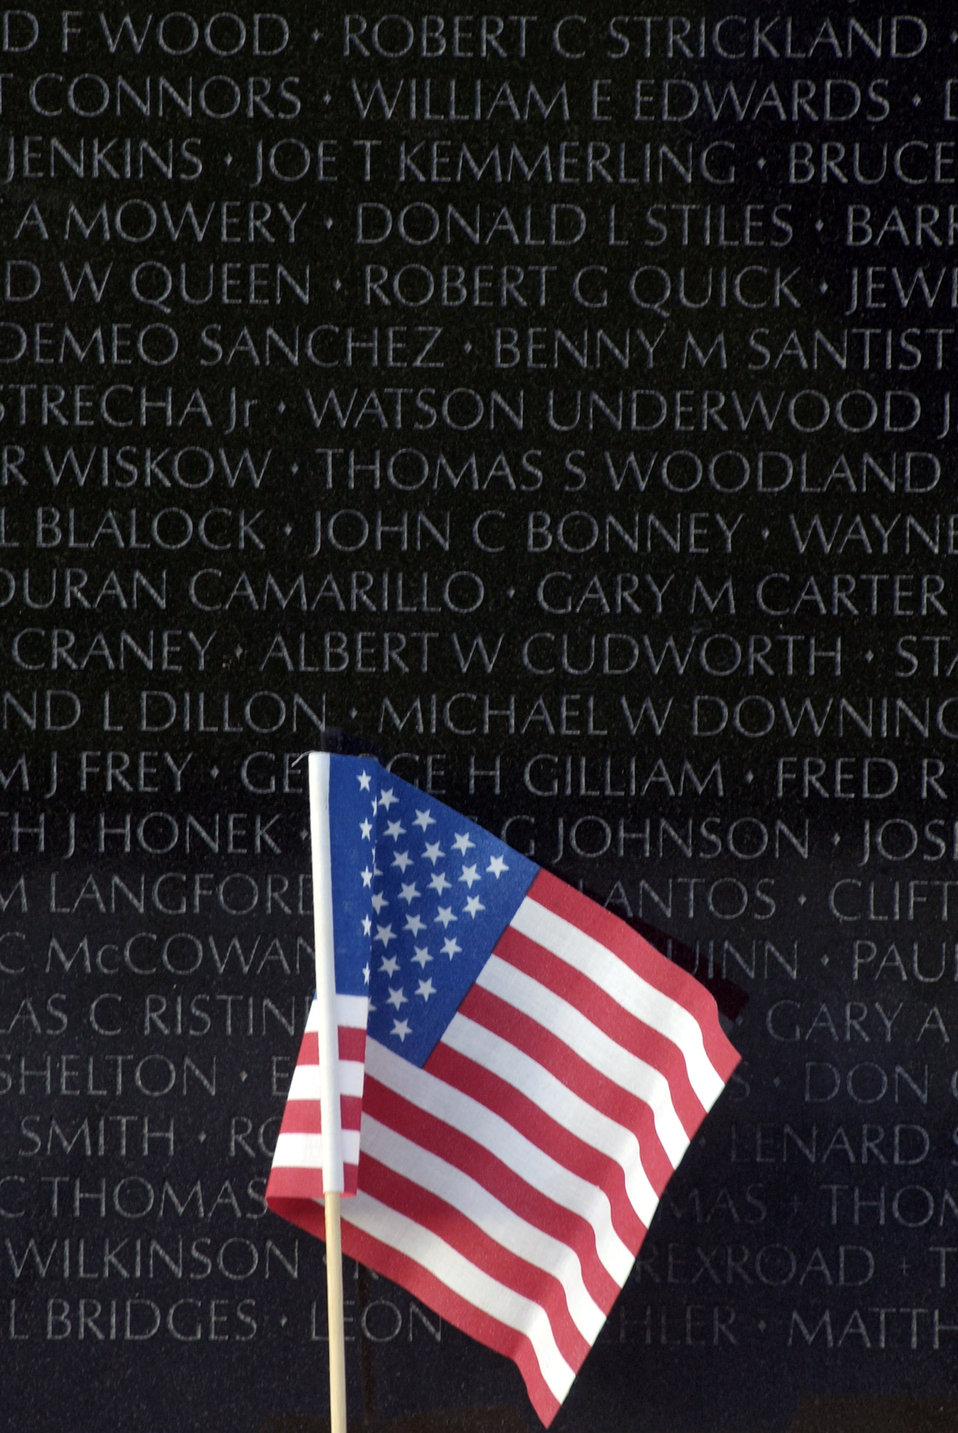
Vietnam wall speaks to both present and past

Mementos such as this U.S. flag were left all along the